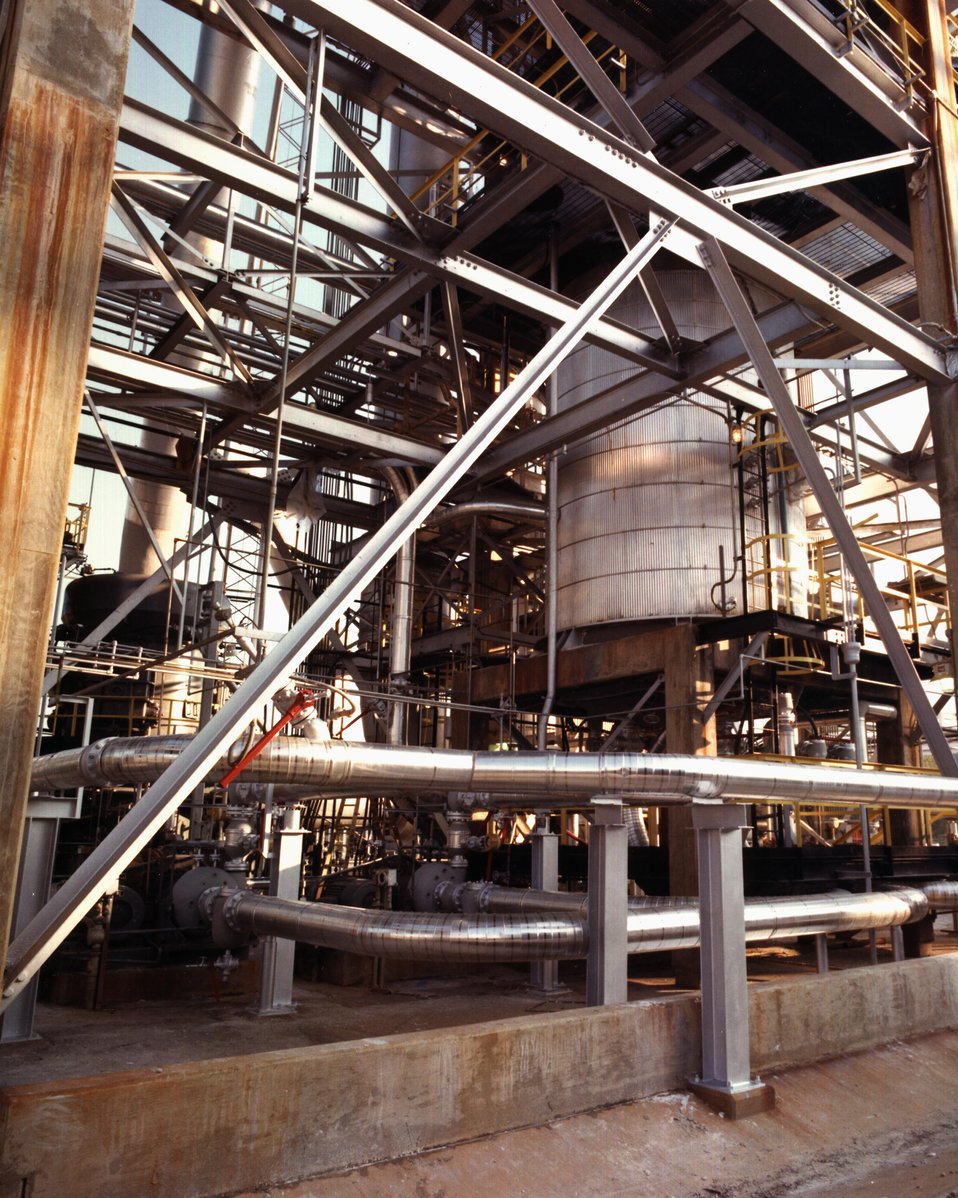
VIEW OF THE SLURRY MIX TANK AT THE PARTIALLY CONSTRUCTED H-COAL 600-TONS-PER-DAY PILOT PLANT.